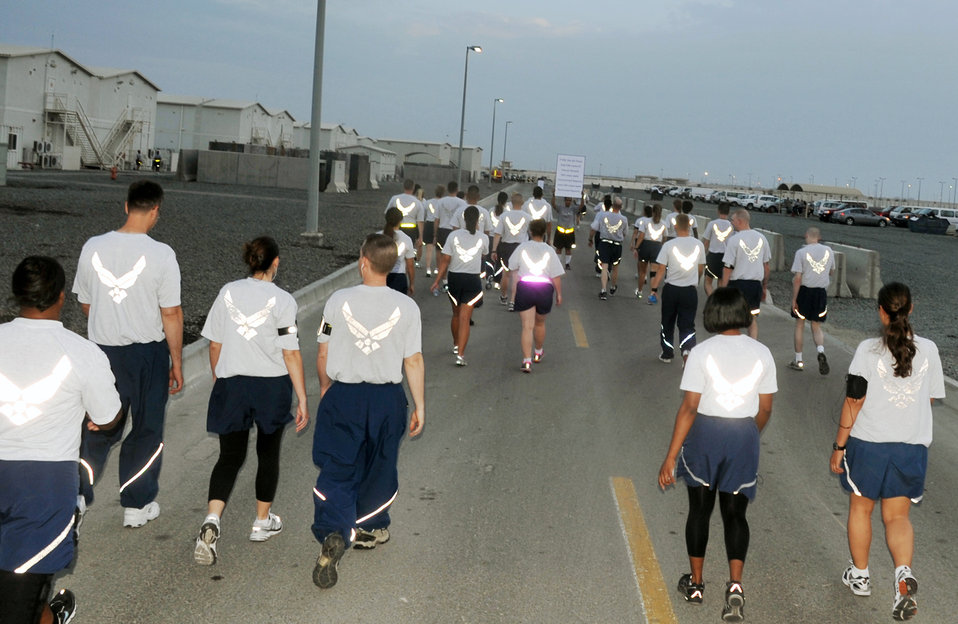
Deployed wing holds walking event observing Sexual Assault Awareness Month

Airmen participate in the